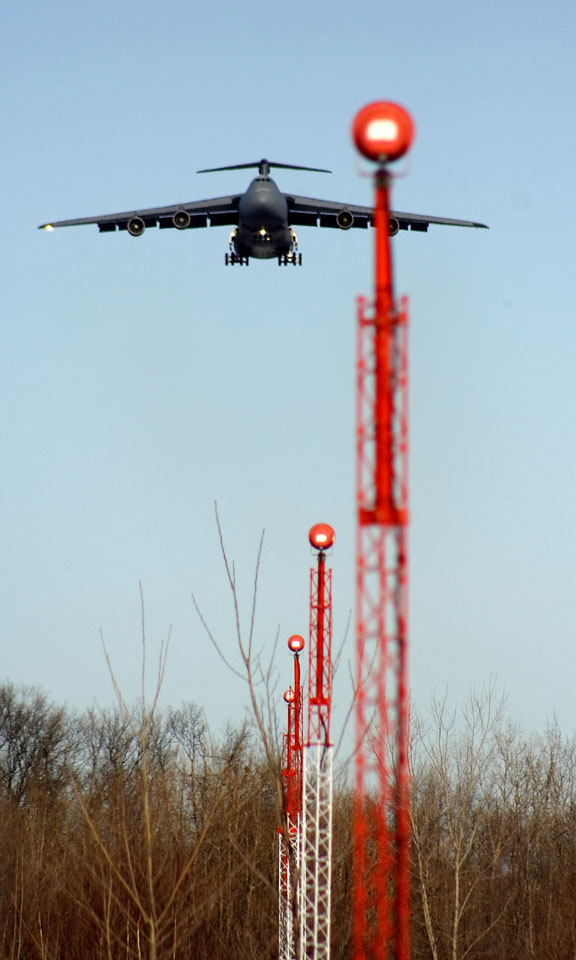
Way up north

A C-5 Galaxy comes in for a landing Feb. 15, 2011, at Canadian Force Base Trenton, Canada.